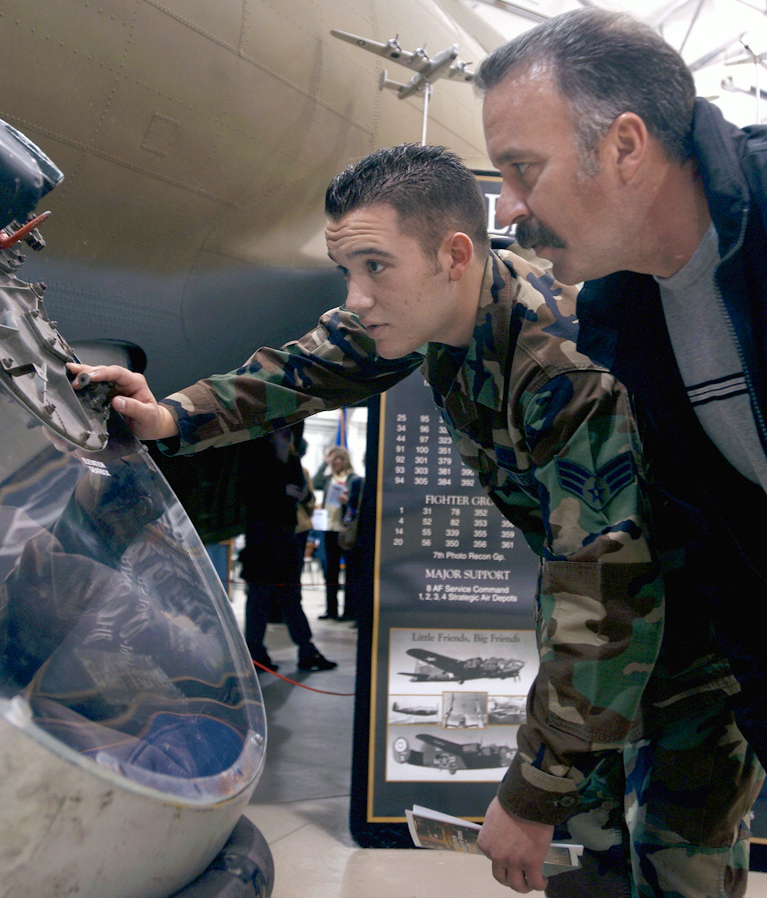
A closer look

DOVER AIR FORCE BASE, Del. -- Senior Airman Robert Loustaunan shows his father, Bob Loustaunan, the Sperry ball turret of a B-17 Flying Fortress at the Air Mobility Command Museum here during Bring Your Parents to Work Day on April 25.